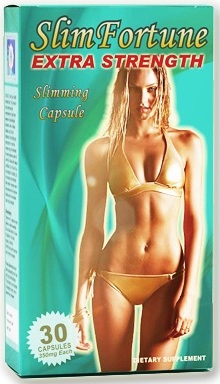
RECALLED - Marketed as a dietary supplements for weight loss

October 7, 2013 – Product Recall – B@B Trade Inc. Issues a Voluntary Recall of 'Slim Fortune', 'Lidiy', and 'Slim Expert' weight loss Dietary Supplement.